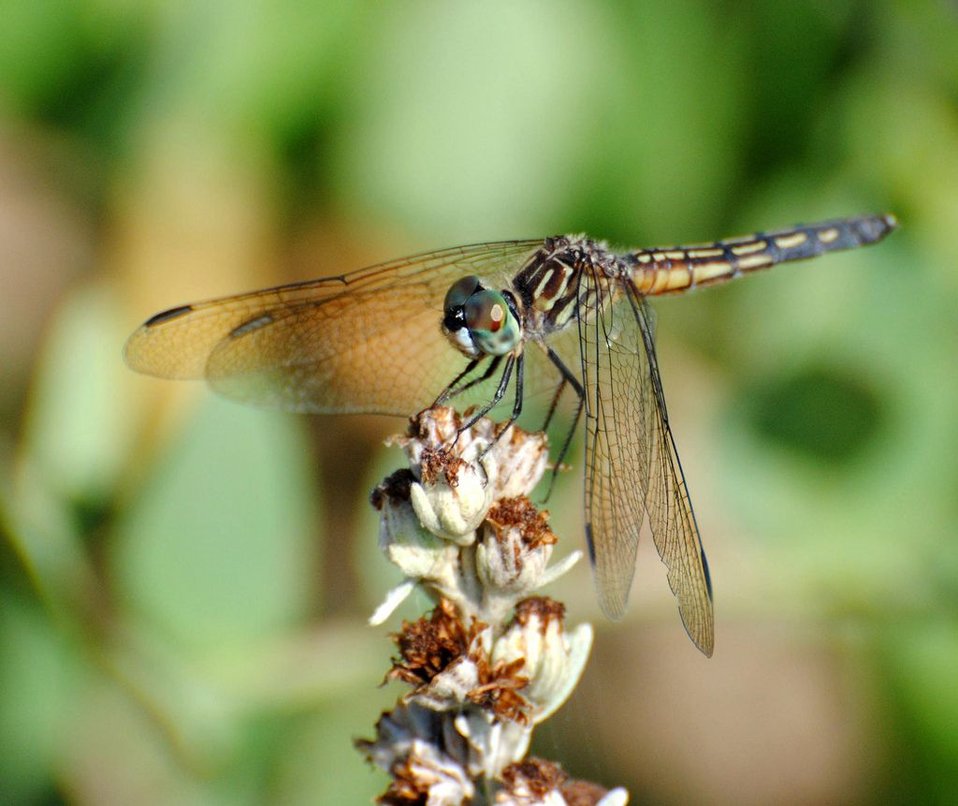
Great Bay Refuge

Dragonfly, Great Bay National Wildlife Refuge, NH.